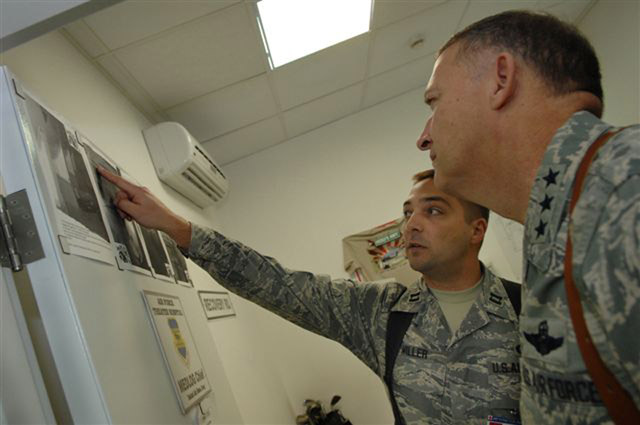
CENTAF commander tours hospital

Capt. Scott Miller gives Lt. Gen. Gary North a tour of the Air Force Theater Hospital at Balad Air Base, Iraq, Jan. 26. General North is 9th Air Force and U.S. Central Command Air Forces commander. Captain Miller is the 332nd Medical Support Squadron commander.